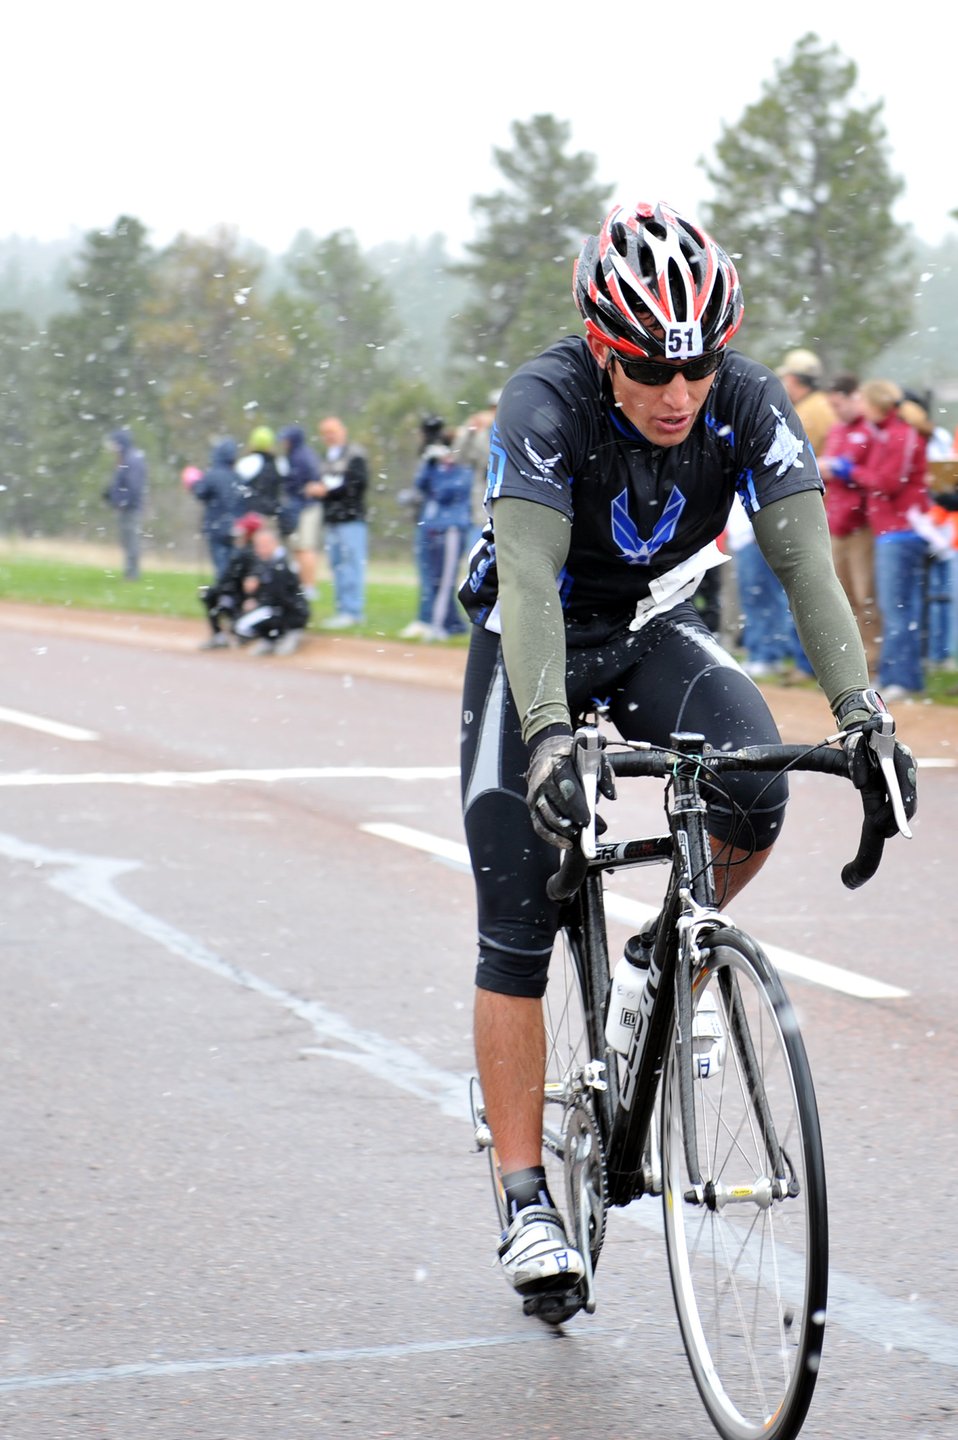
Warrior Games AF Cycling

Staff Sgt. Marc Esposito finishes up with a bronze medal in the 20-kilometer upright bike race for the inaugural Warrior Games May 13, 2010, at the U.S. Air Force Academy in Colorado Springs, Colo. Sergeant Esposito is one of some 200 disabled veterans participating in the Paralympic-style competition May 10 through 14.